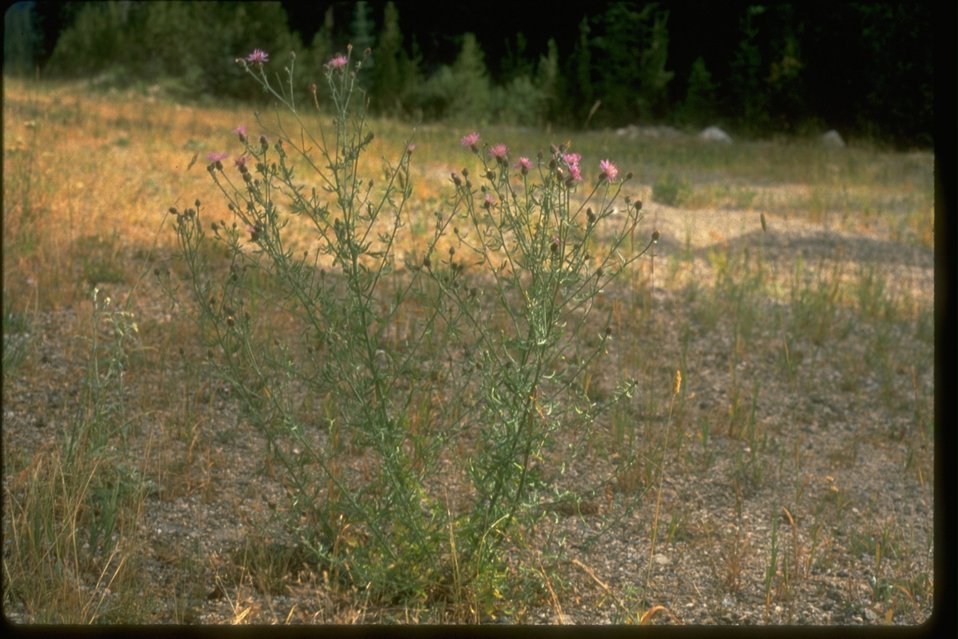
A single Spotted Knapweed.